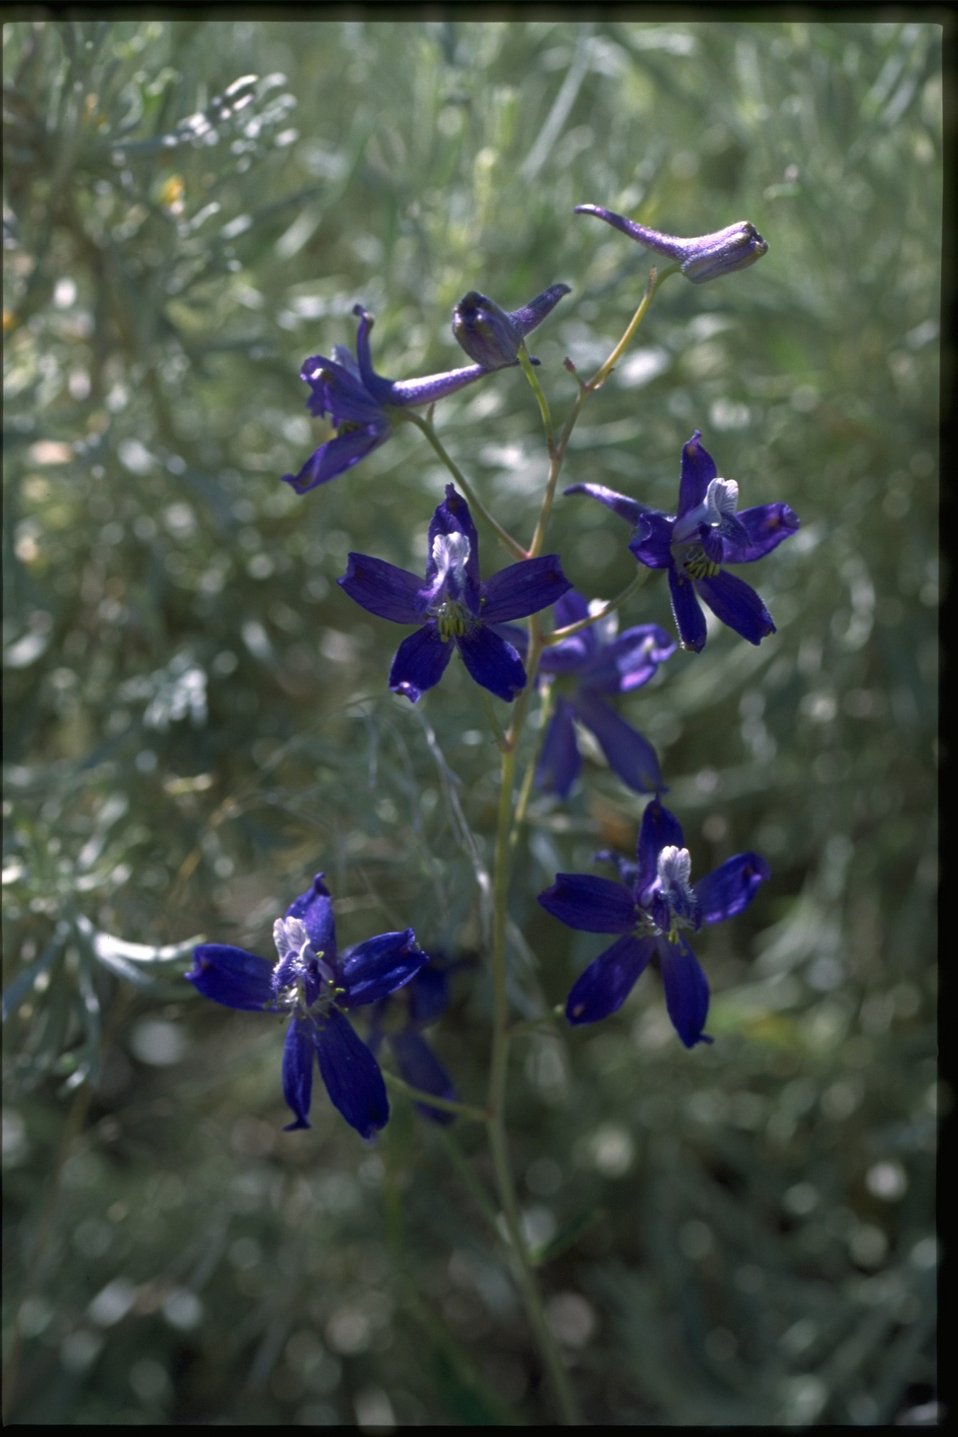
Medium shot of Delphinium.